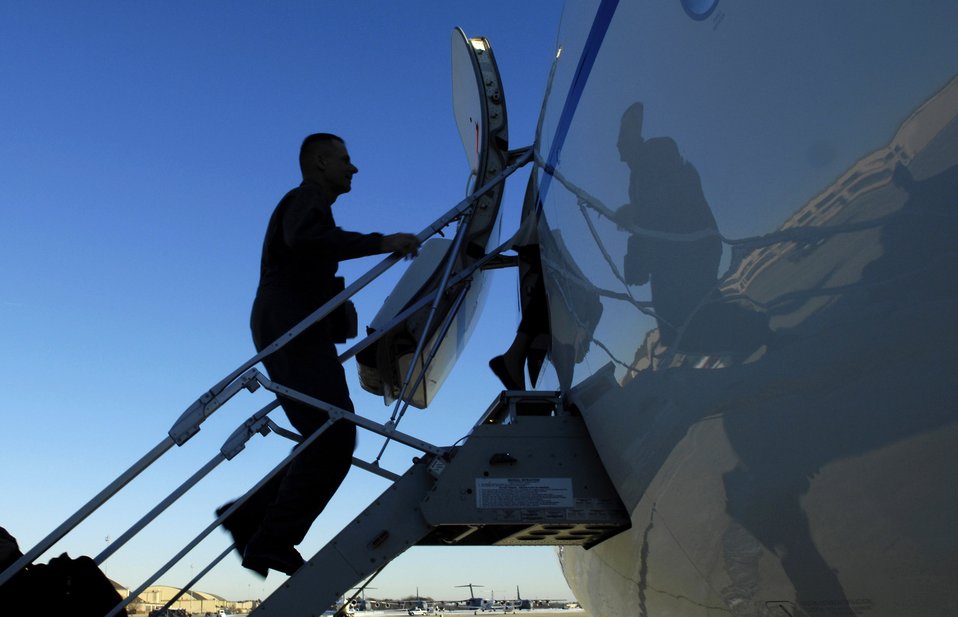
General Pace visits Hawaii

Gen. Peter Pace, chairman of the Joint Chiefs of Staff, boards a C-40 aircraft at Andrews Air Force Base, Md., on Feb. 8 to begin his visit to the Pacific region.